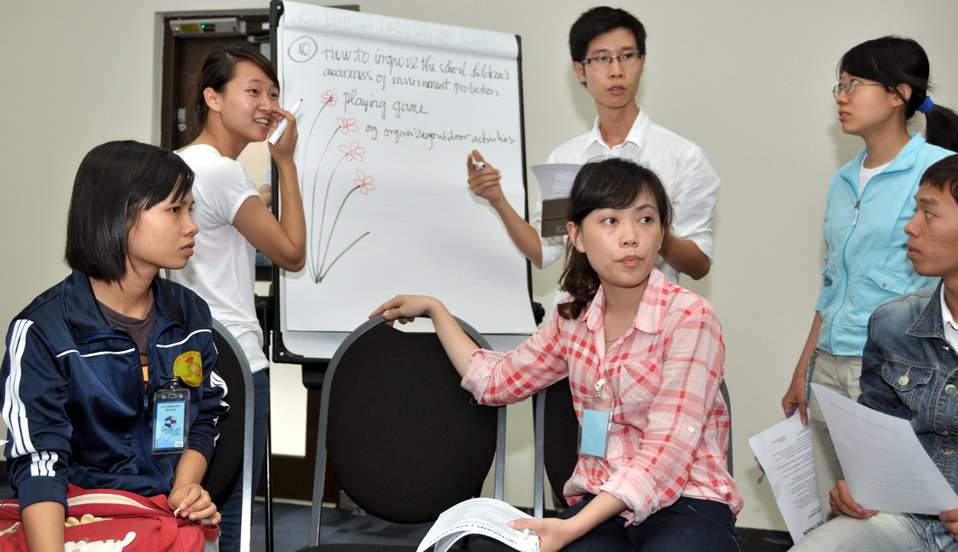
Students join the ‘USAID and Higher Education in Vietnam’ talk

Photo: @USAIDVietnam, November 19, 2012